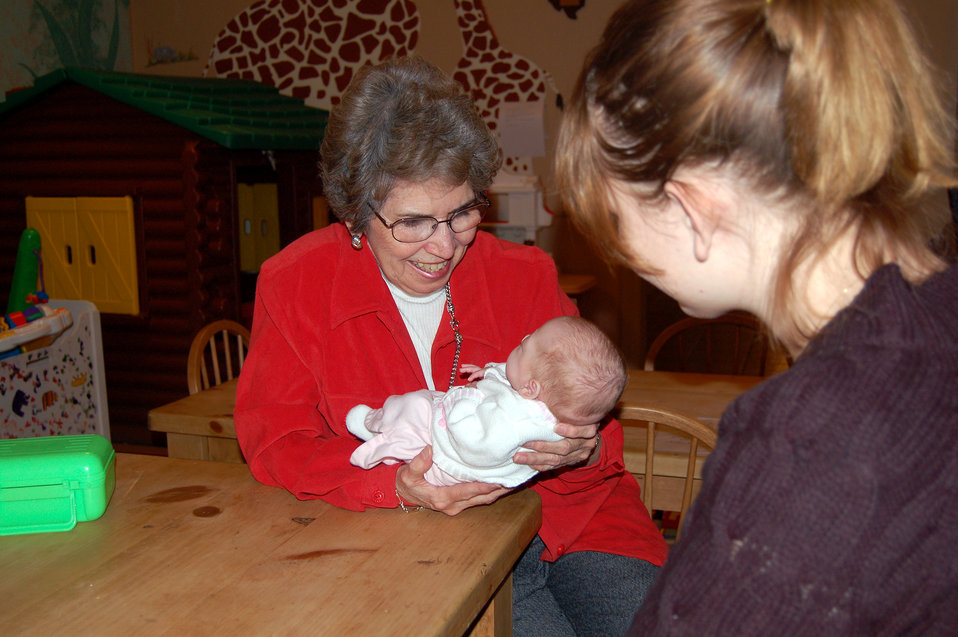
Fisher House offers help in times of crisis

Paula Lewis, the Lackland Air Force Base, Texas, Fisher House manager, holds four-month old Haley Cornish as her mother Sarah looks on. Haley was born three months early and weighed only two pounds at birth. The Fisher House offers a place to stay for patients and family members of people hospitalized at military medical centers.